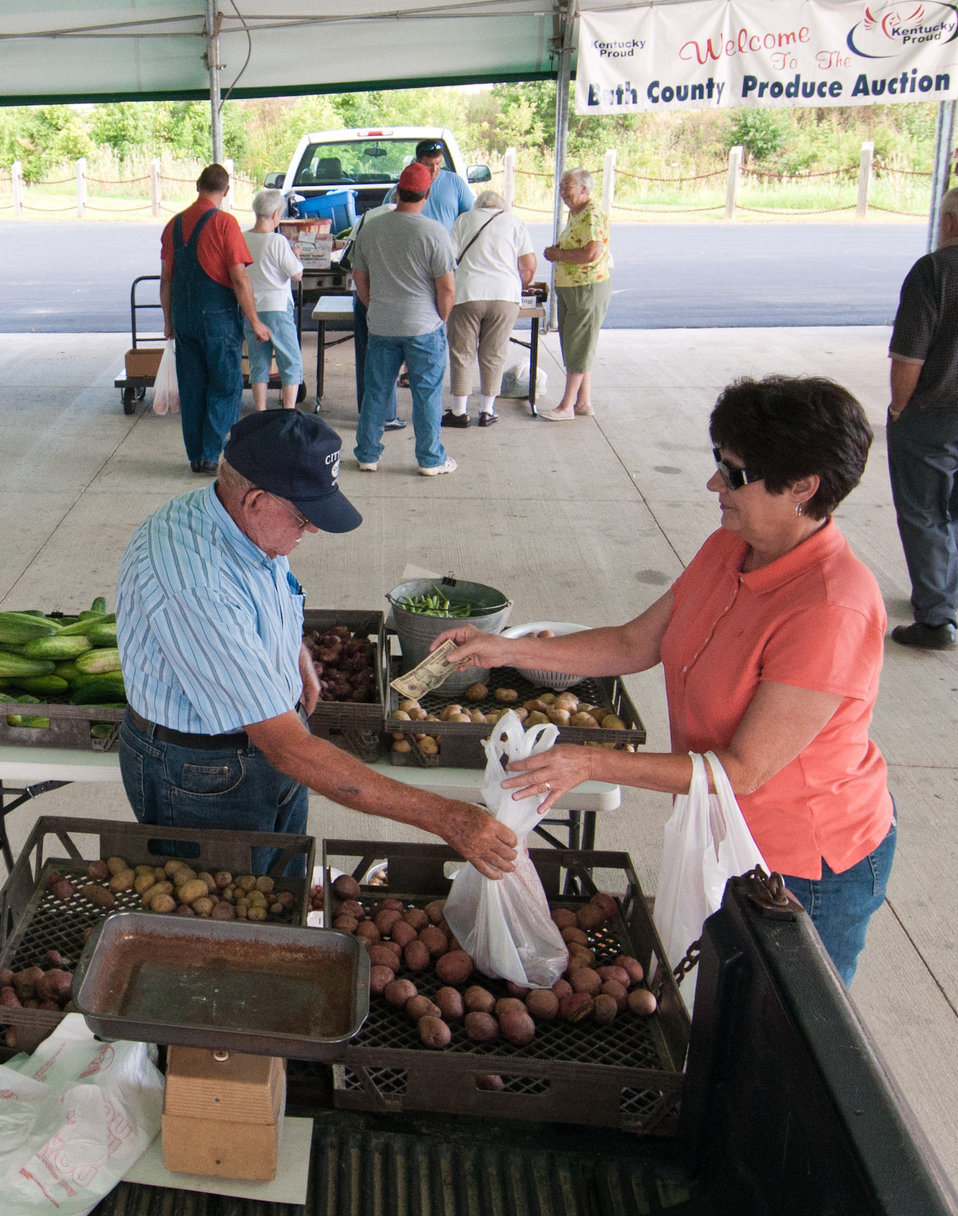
Walter McMcGlothin (left) makes another sale at the Bath County Agricultural Education and Marketing Center, Owingsville, KY, on Friday, July 15, 2011. The Center was the recipient of a $400,000 Rural Business Enterprise Grant. It has given farmers and producers from Bath and surrounding counties the opportunity to manufacture and market their locally grown and locally produced value-added and “Kentucky Proud” branded products, including but not limited to, fresh produce, artisan crafts and specialty food products. The Center is open year-round and allow residents to sell products in four different retail categories, including Kentucky products, regional crafts, “green” groceries and bakery/deli. Several producers expressed their gratitude for Rural Development’s assistance in making the center a reality. The project was made possible through funding the American Recovery and Reinvestment Act of 2009 enacted by the 111th United States Congress in February 2009 and signed into law on February 17, 2009, by President Barack Obama.